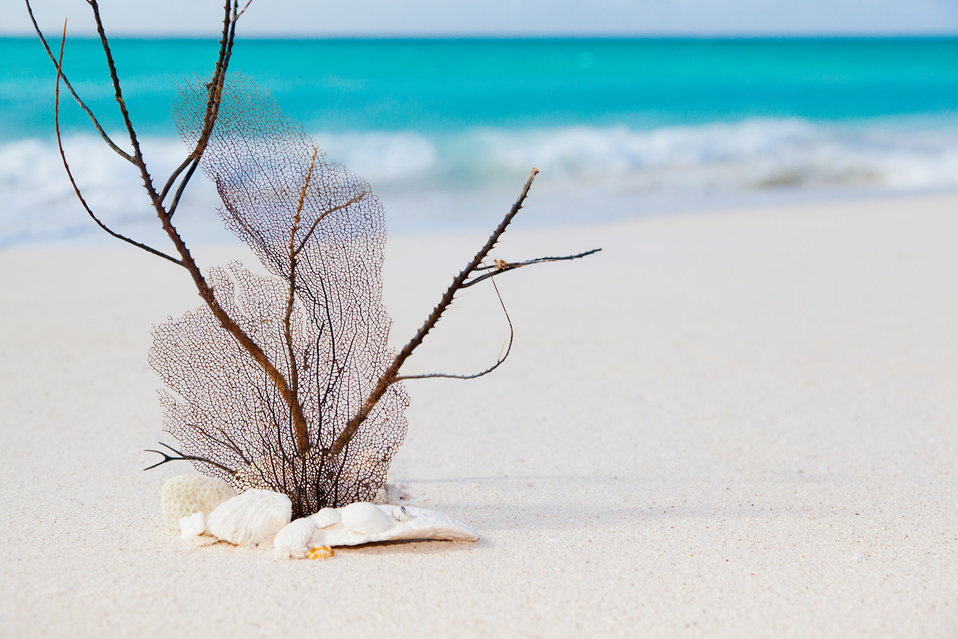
Beach and sea concept

Sea and beach concept image.